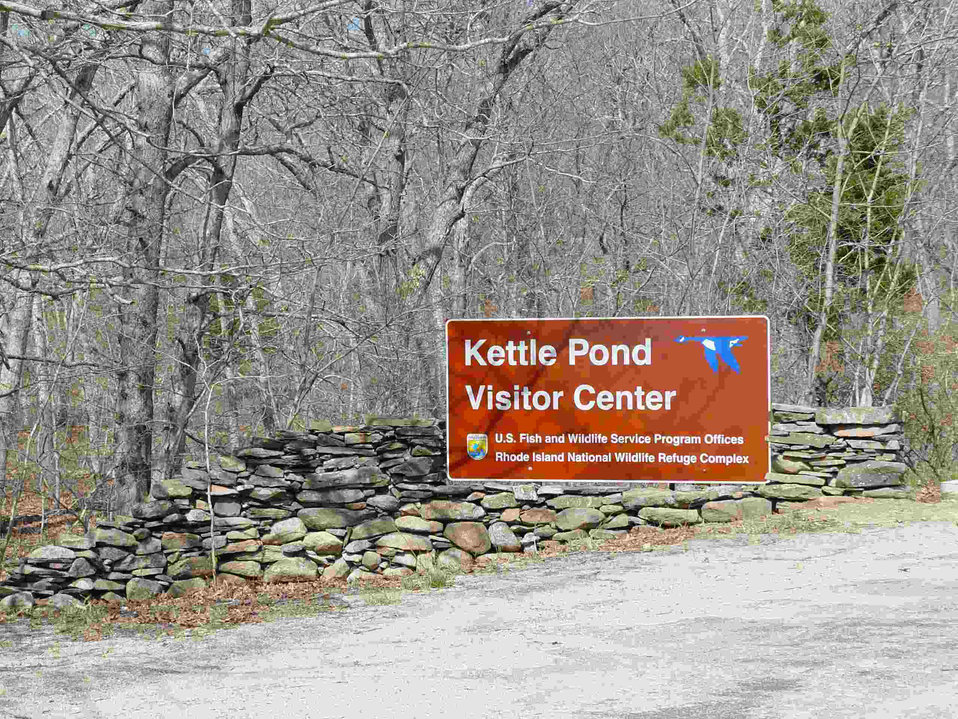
Kettle Pond Visitor Center in Charlestown, RI.